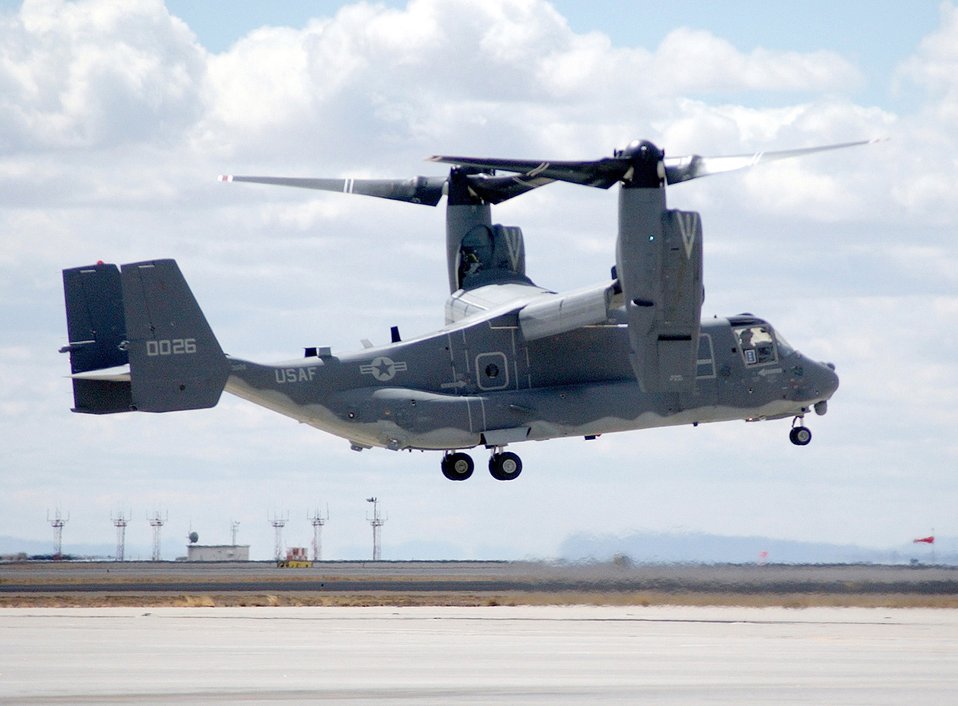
Osprey gets new nest

The Air Force's first operational CV-22 Osprey tilt-rotor aircraft hovers upon arrival at Kirtland Air Force Base, N.M., Monday, March 20, 2006. The aircraft will be flown by Airmen with the 58th Special Operations Wing to train future Osprey pilots.